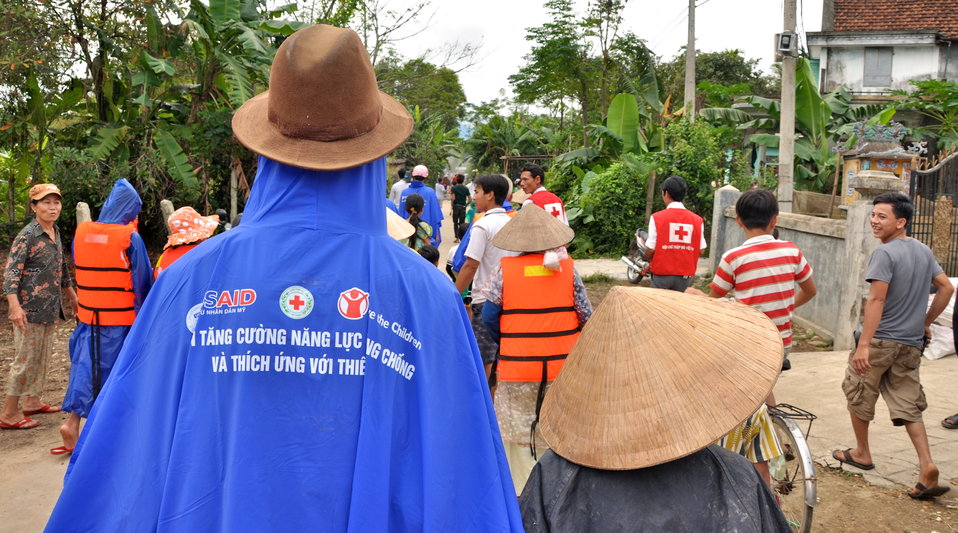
USAID and Save the Children support community evacuation drill and emergency preparedness in central Vietnam

Loc An Commune, Phu Loc District, Thua Thien Hue Province
December 4, 2012, Photo: Richard Nyberg, @USAIDVietnam